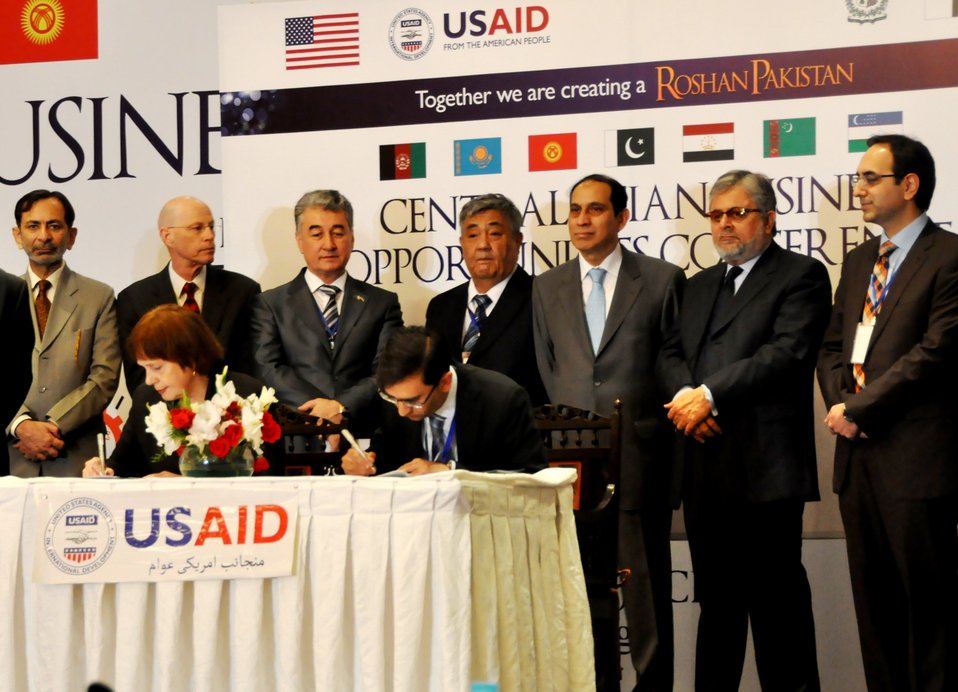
Central Asian Business Opportunities Conference

CABOC delegates while signing the Memoranda of Understanding at the closing event on April 16, 2014